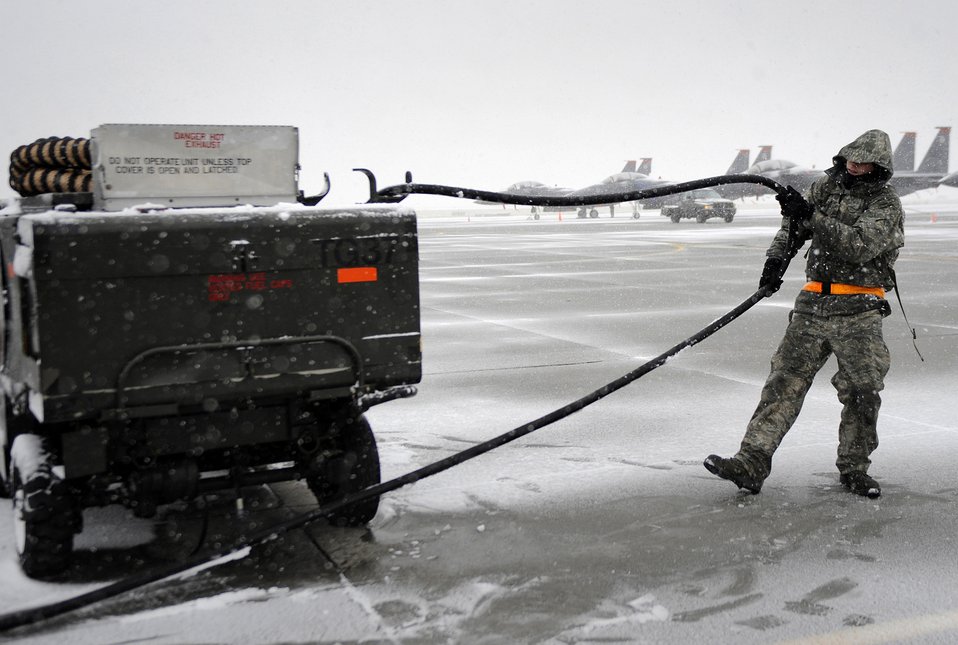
One more pull

Senior Airman Gavin Washburn, a crew chief with the 391st Fighter Squadron, stows a hose during an exercise on the flightline at Mountain Home Air Force Base, Idaho, Nov. 21, 2010. The wing uses the exercise to gauge its ability to meet wartime tasking.